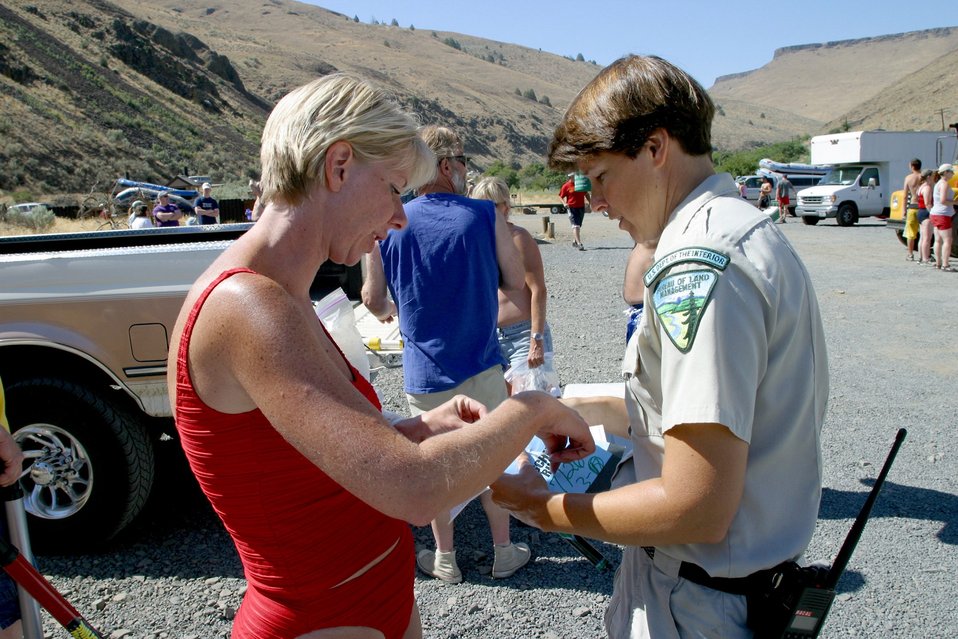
BLM River Rangers at Harphamp Flat check permits and issue boat tags while reminding users of current safety and fire regulations.